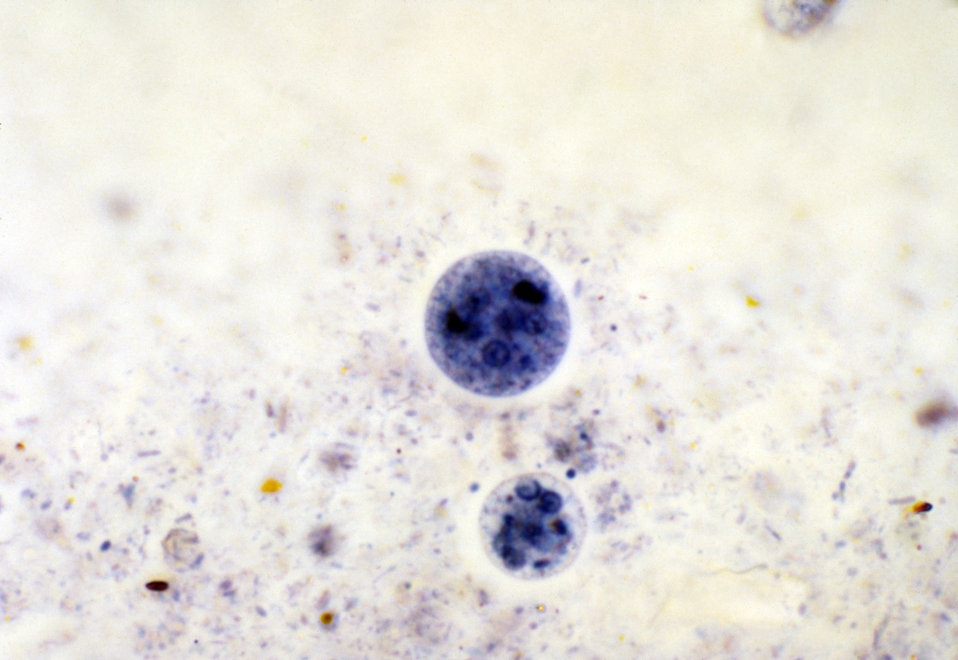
This photomicrograph depicts both an Entamoeba coli, and an Entamoeba histolytica cyst of these parasitic amoeba.